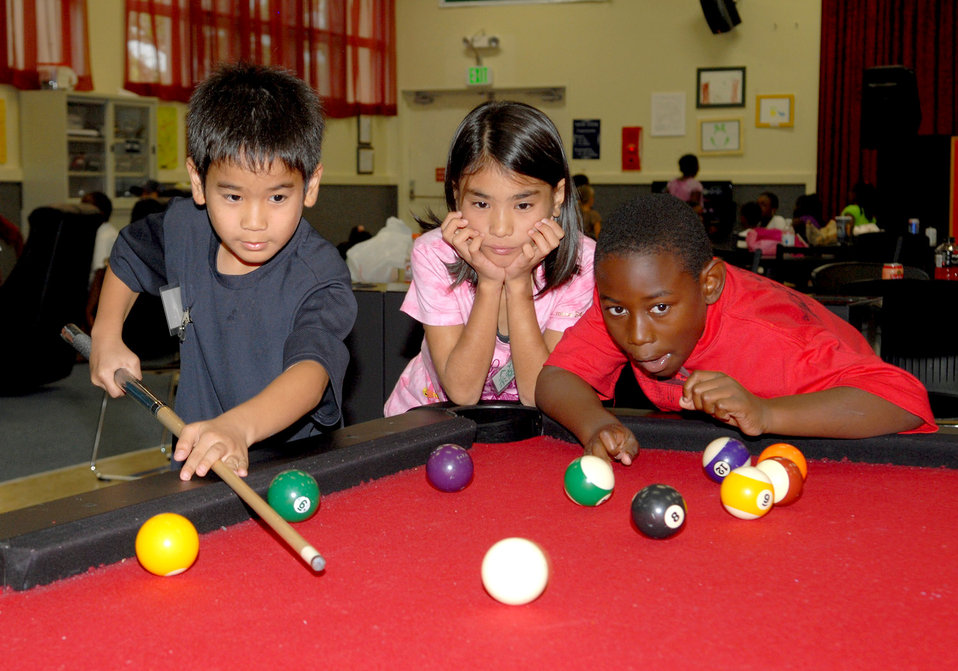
American, Japanese children

Yuuri Kijyoka (left) prepares to shoot a pool ball while Ayaka Chibana (center) and Carlton Furman look on Aug. 5, 2010, at Kadena Air Base, Japan.